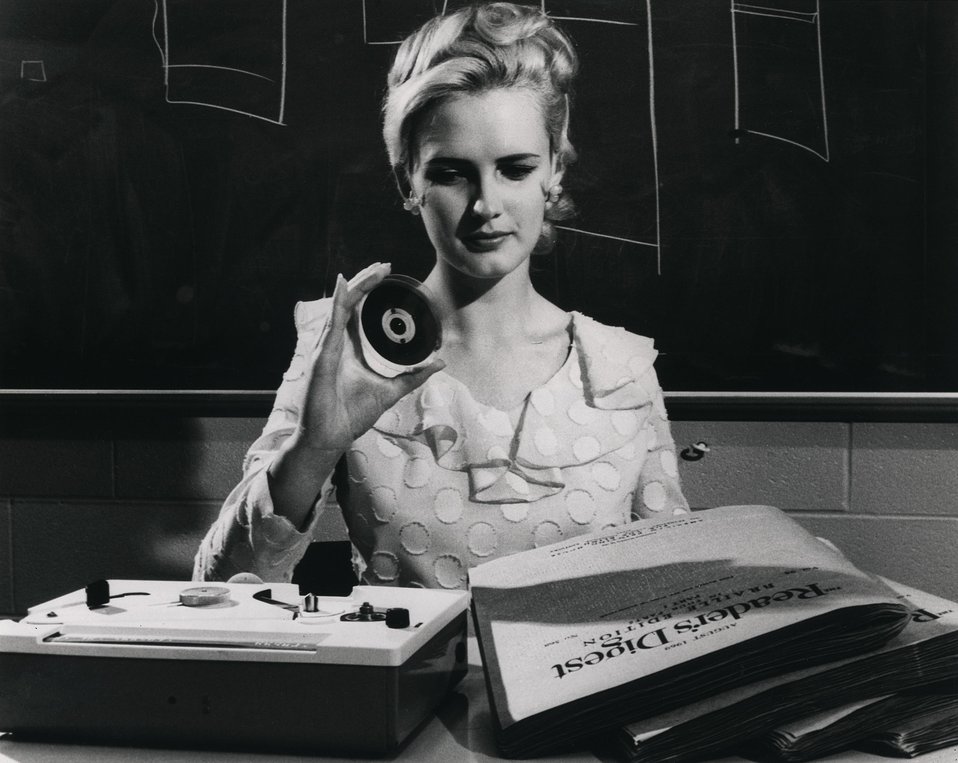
The small roll of 1/4 inch magnetic tape represents an amount of braille information equivalent to three editions of the Readers Digest.
c.1970